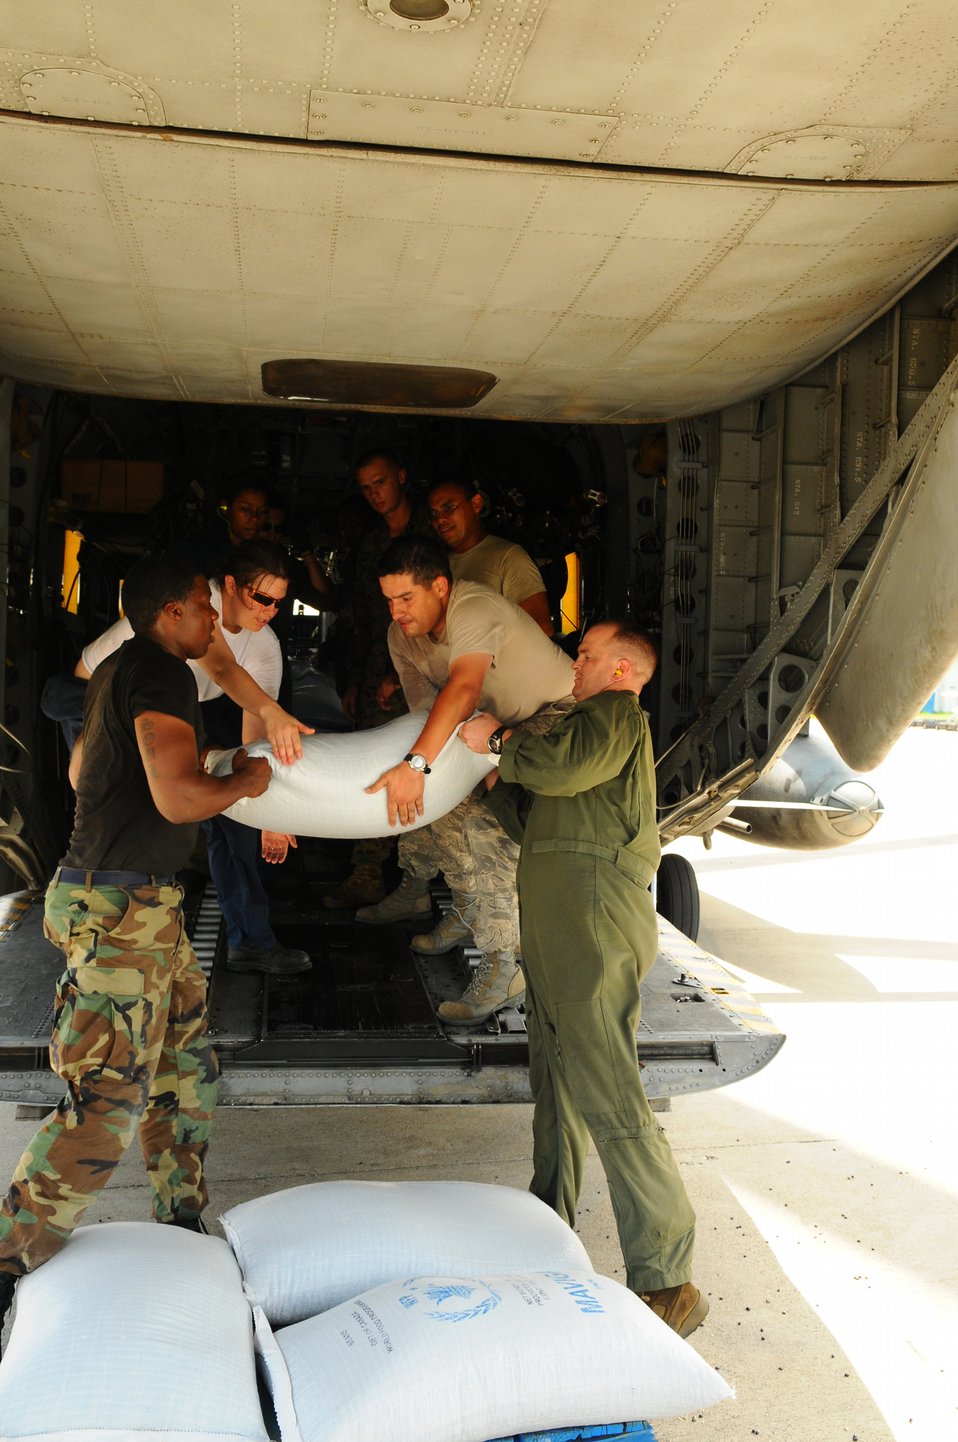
hurricane relief

Airmen, Marines and Sailors from USS Kearsarge unload supplies to support hurricane relief efforts. America's contribution to the relief efforts were coordinated by the United States Agency for International Development and its Office of U.S. Foreign Disaster Assistance.